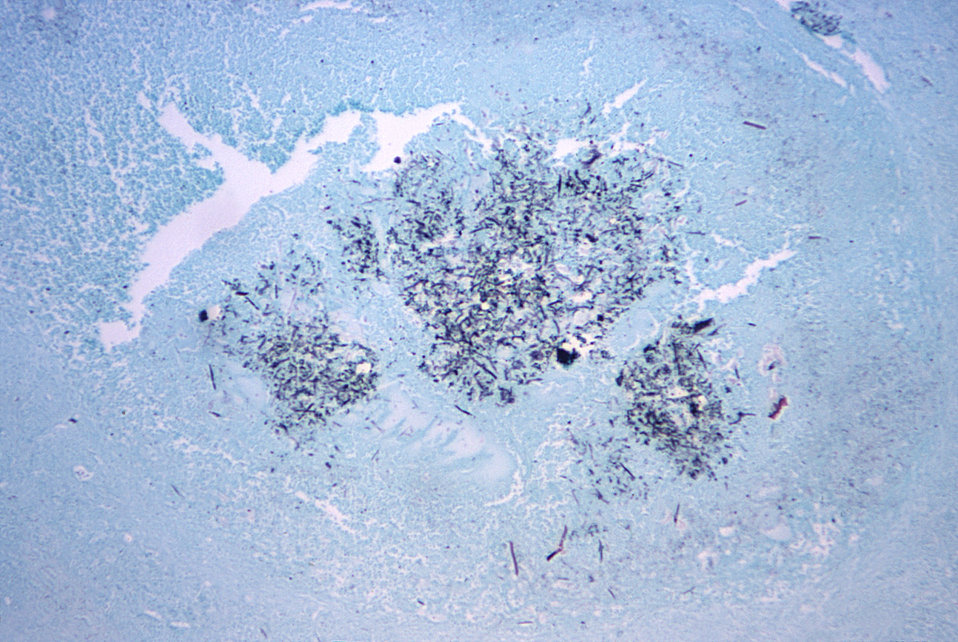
Under a low magnification of 50X, this photomicrograph of a mouse (murine) brain tissue sample revealed some of the histopathologic changes associated with a tissue reation due to the presence of the fungus, Bipolaris hawaiiensis, formerly known as Drechslera hawaiiensis.